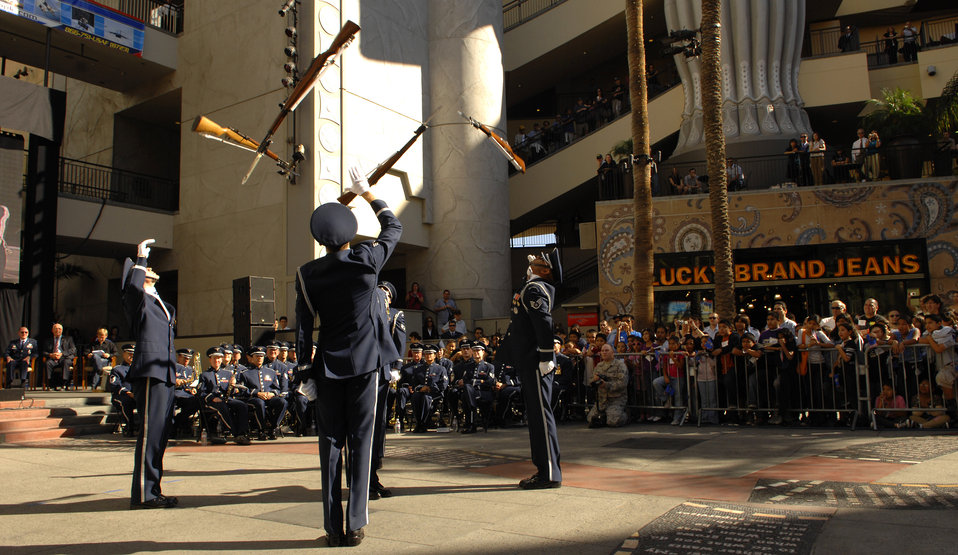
Air Force Week showcases people, missions

The Air Force Honor Guard Drill Team performs Nov. 14 at Hollywood and Highland in Los Angeles for the opening ceremonies for Air Force Week-Los Angeles. The drill team performance was one of many attractions at the event. Others included flyovers by several different Air Force aircraft, interactive expos and performances by the Air Force band. Air Force Week-Los Angeles is Nov. 14 to 21 and has events throughout the area.